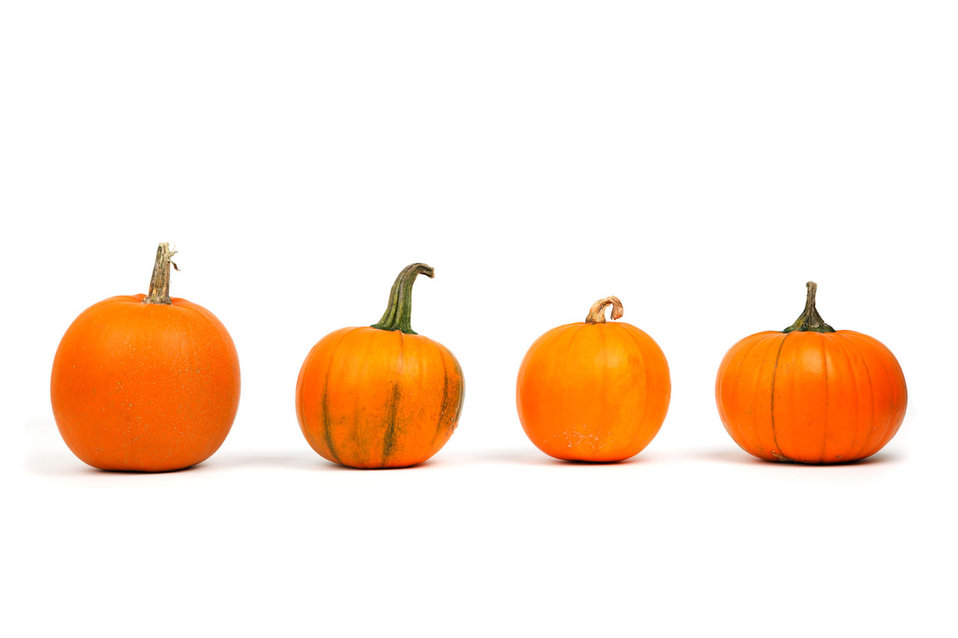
Pumpkins in a row

Four pumpkins in a row isolated on white background.